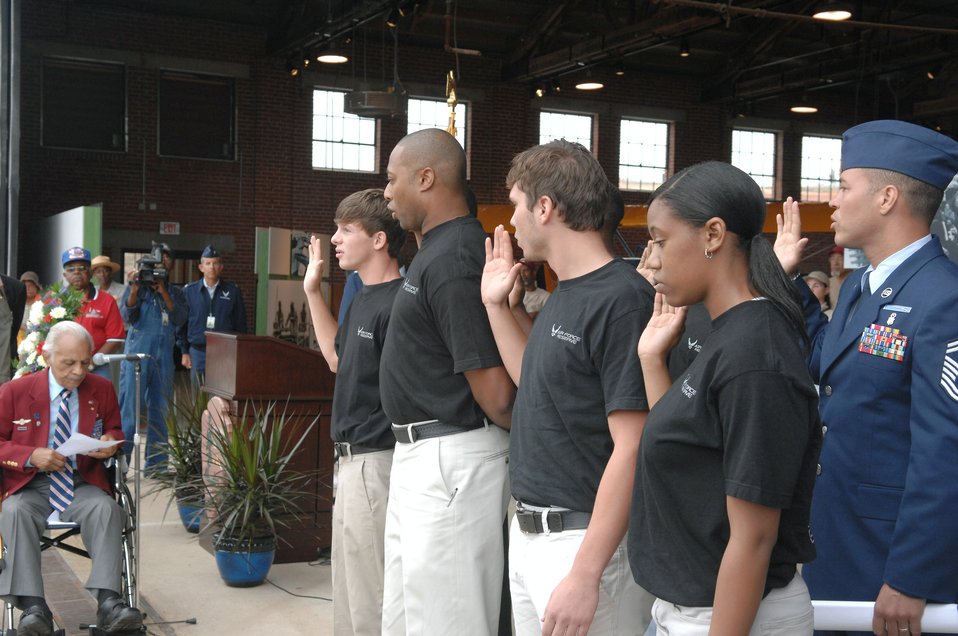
Remembering the Tuskegee Airmen

Retired Col. Herbert E. Carter re-enlists Airmen Oct. 11 at Moton Field in Tuskegee, Ala. Colonel Carter is one of the original members of the Tuskegee Airmen and was on hand for the opening of the Tuskegee Airmen National Historic Site. Moton Field in the 1940s was the only primary flight training facility for the first African American pilot candidates in the Army Air Corps, these pilots are known as the Tuskegee Airmen.